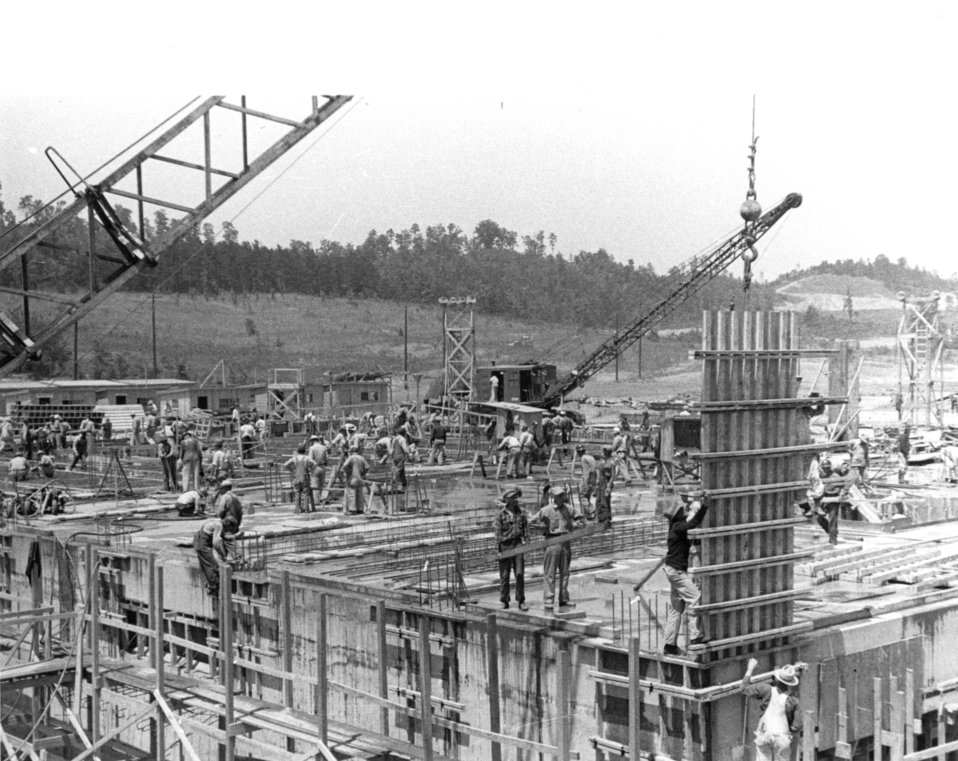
K-25 at Oak Ridge